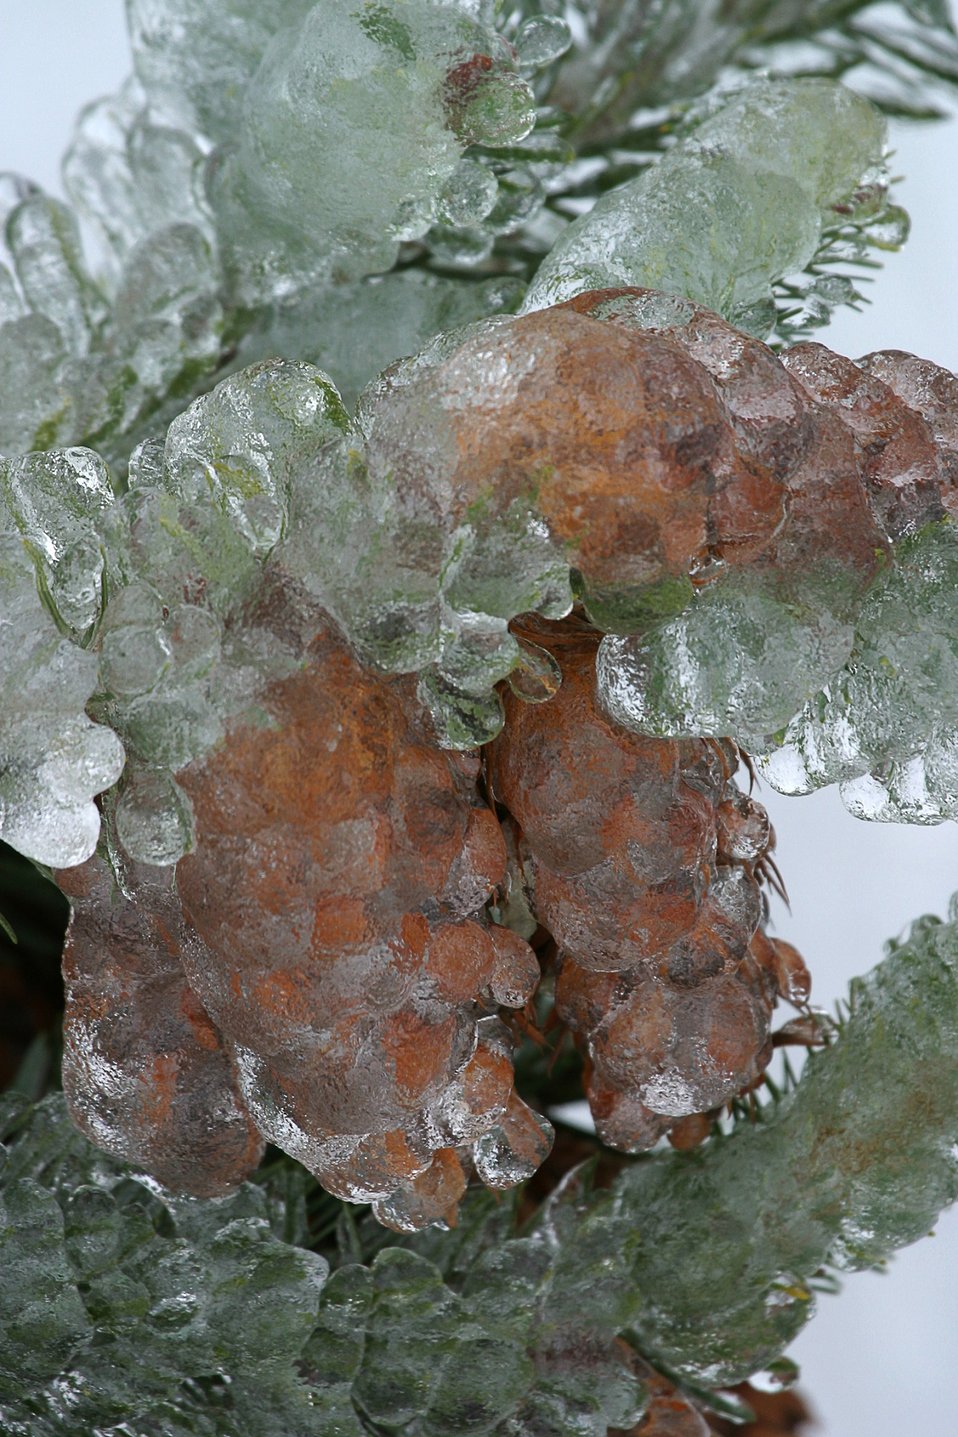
Snow and ice on Douglas Fir Bows and cones during the storm of January 2004.